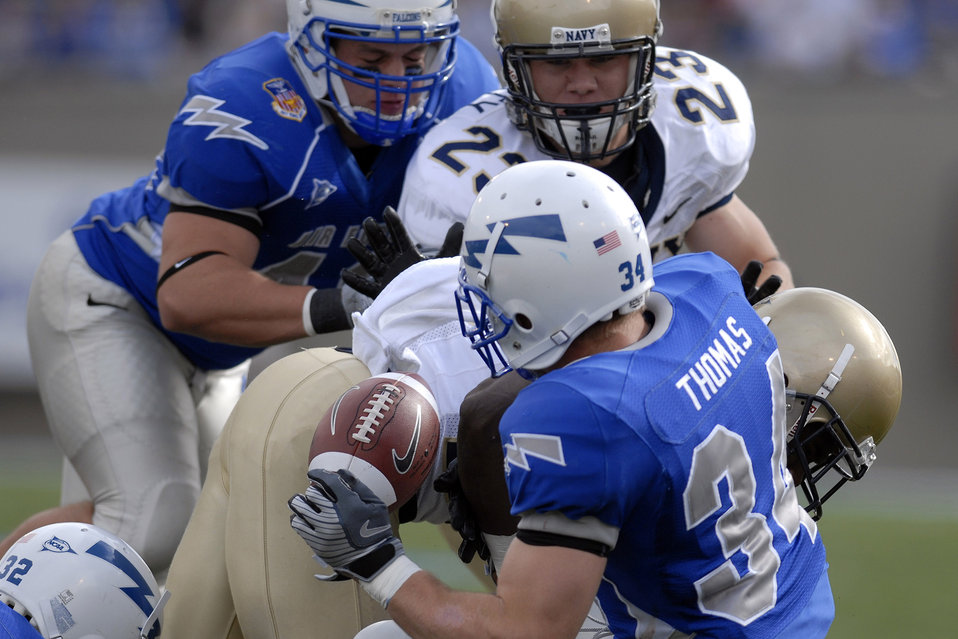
Football: Navy holds off Falcons

U.S. Air Force Academy safety Chris Thomas strips the ball during 2nd quarter action as Navy defeated the Falcons 33-27at the Academy in Colorado. Air Force came up short Oct. 4 in their quest to reclaim the Commander-in-Chief's trophy.